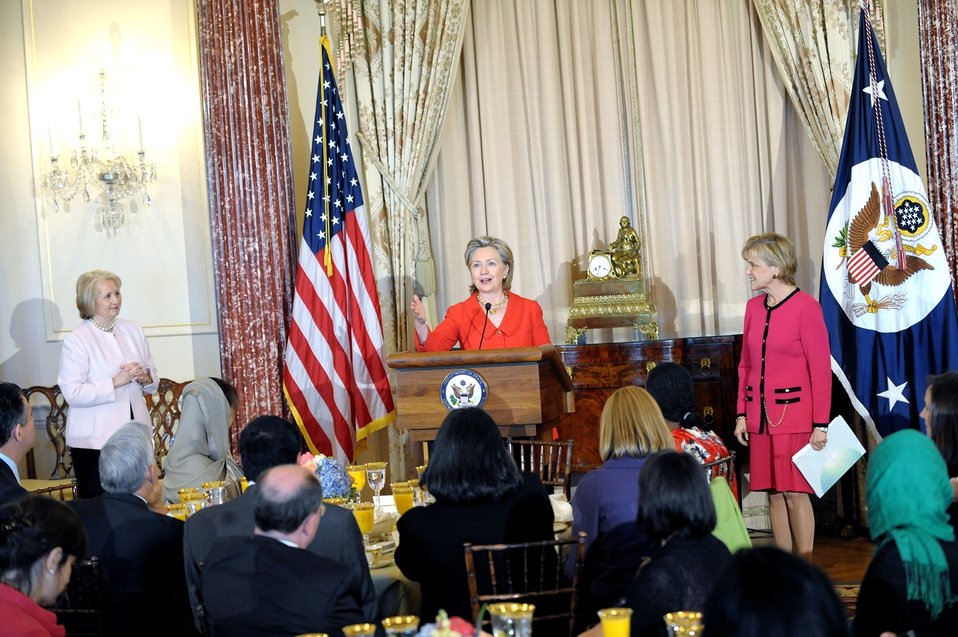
Secretary Clinton Hosts Breakfast for Women Entrepreneurs

U.S. Secretary of State Hillary Rodham Clinton hosts a breakfast to honor Women Entrepreneurs who attended the 2010 Presidential Summit on Entrepreneurship in the Franklin Room at the U.S. Department of State, Washington, DC, April 28, 2010.